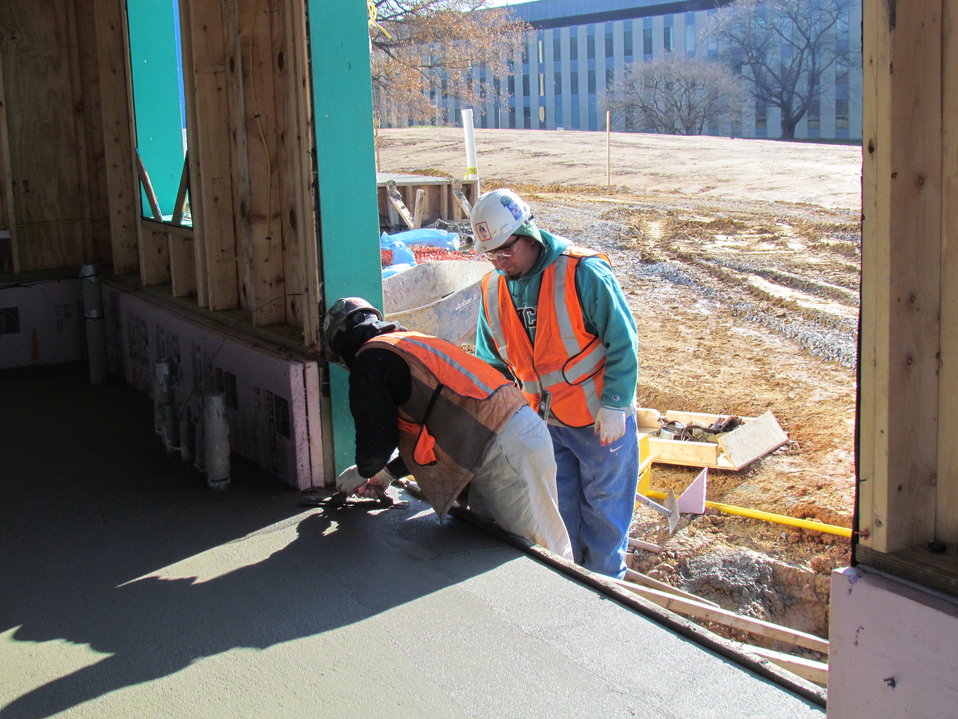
Net-Zero Energy Residential Test Facility - Workmen finishing the detached garage's concrete floor.